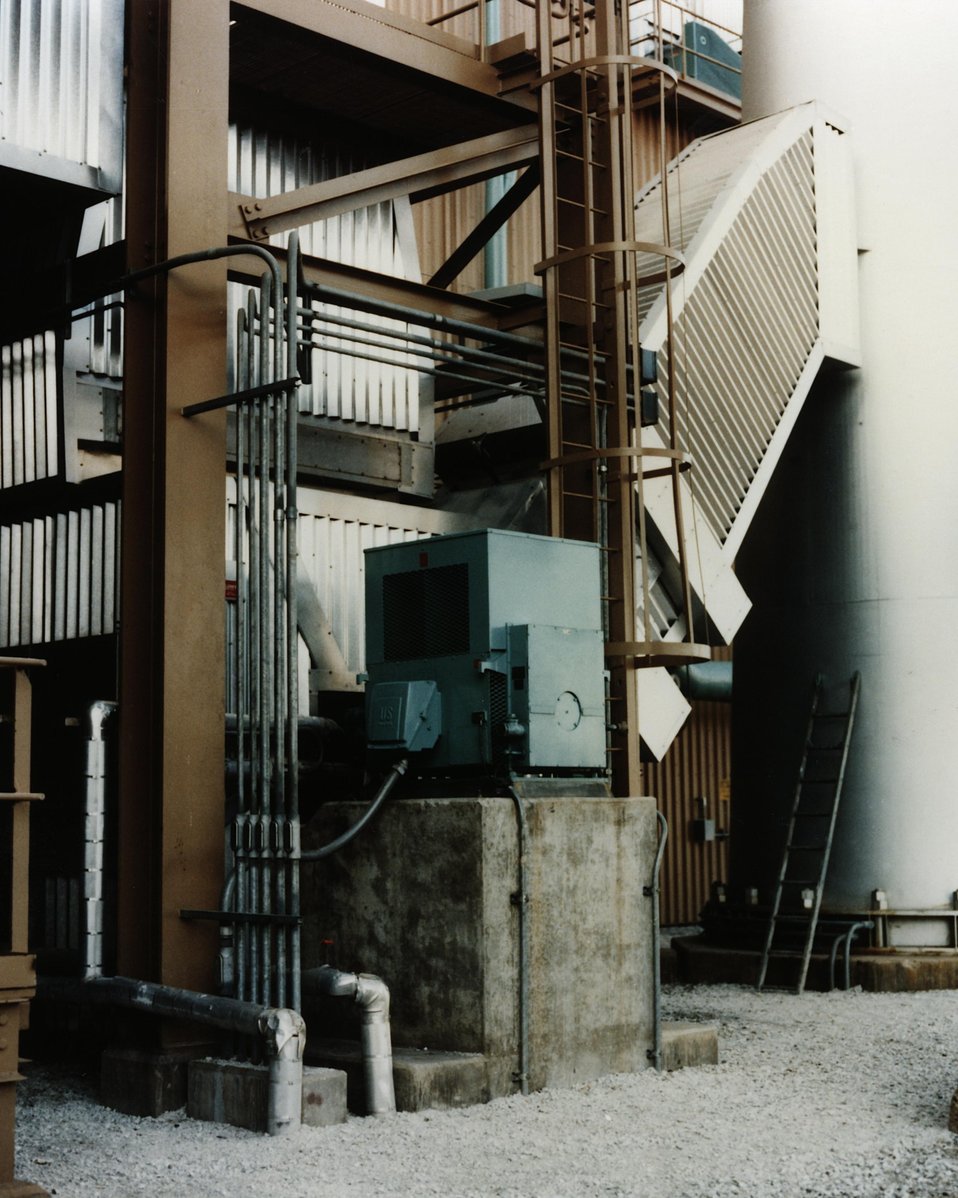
THE INDUCED-DRAFT FAN (FOREGROUND) AND EXHAUST STACK (RIGHT REAR) FOR THE AFB SYSTEM.

OBJECTIVES OF THE GREAT LAKES AFB STEAM BOILER PROJECT ARE THE DESIGN, CONSTRUCTION, TESTING, AND OPERATION OF A PRO- TO TYPE BOILER TO ESTABLISH THE PRACTICALITY OF BURNING HIGH-SULFUR COAL AND THE COMPILATION OF SUFFICIENT DATA FROM PROTOTYPE OPERATIONS TO ENABLE THE INDUSTRY TO DESIGN AND OPERATE FULL-SIZE UNITS IN INDUSTRIAL PLANTS. THE GREAT LAKES PROJECT IS USING A 50,000 LB/HR SUPER HEATED STEAM BOILER WITH A COAL RATE OF 2.5 TONS/HR.